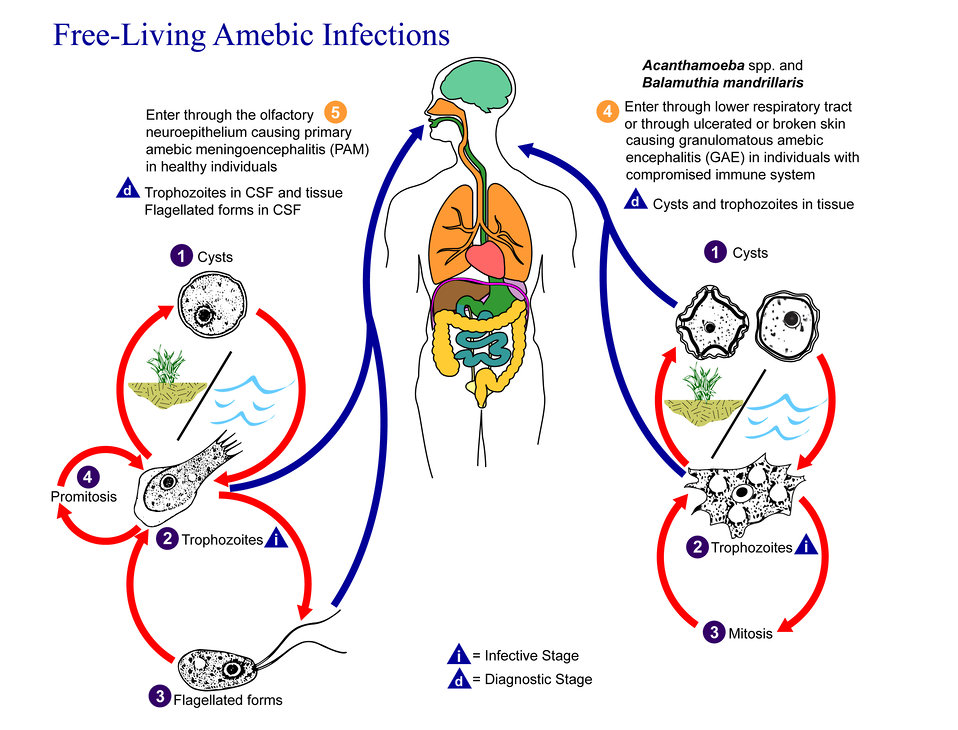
This is an illustration of the life cycle of the parasitic agents responsible for causing 'free-living' amebic infections.